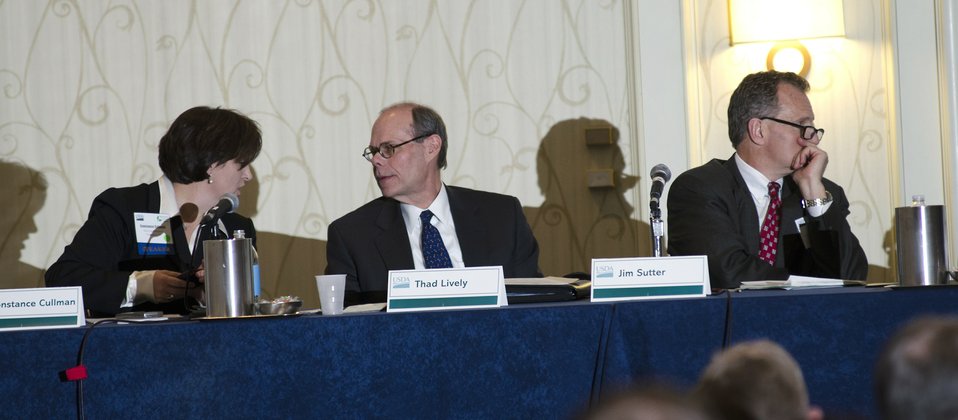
The U.S. Department of Agriculture (USDA) 2013 Agricultural Outlook Forum was held at the Crystal Gateway Marriott Hotel in Arlington, VA on Thursday, Feb. 21, 2013. At the forum a breakout session on Challenges in Trading with the European Union discussed trade barriers related to distorting sustainability requirements, use of biotechnology regulations, and technical barriers such as antibiotic and hormone restrictions on meat.